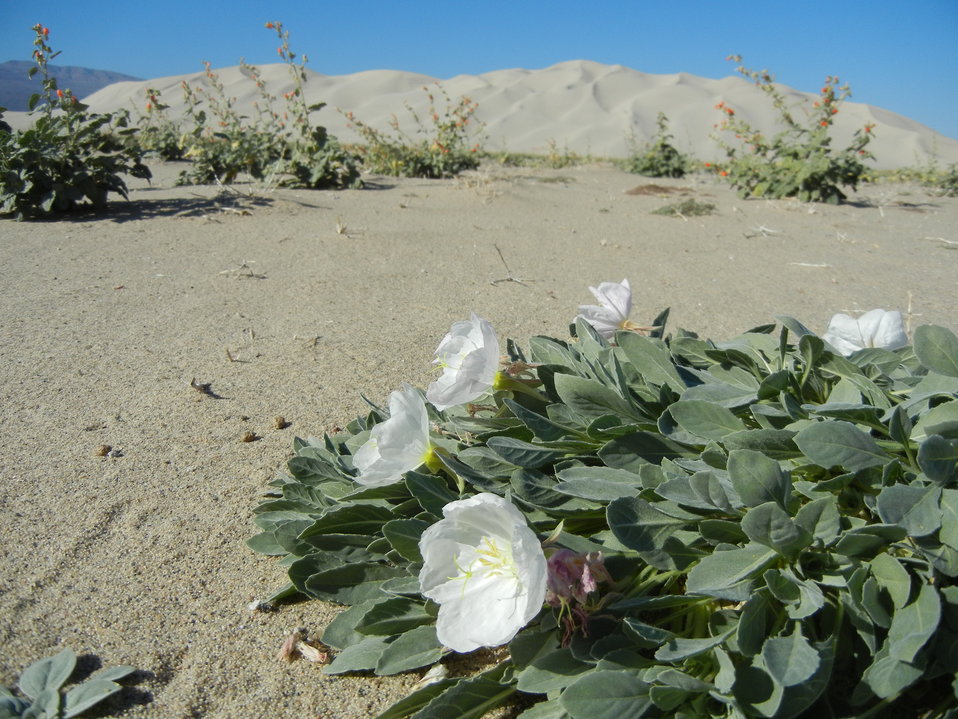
Eureka Valley evening-primrose

The Eureka Valley evening-primrose produces clusters of white fading-to-pink flowers, which continue to be produced through the spring and summer months as long as conditions are favorable. Evening-primrose species are pollinated by hawkmoths, butterflies, and bees.